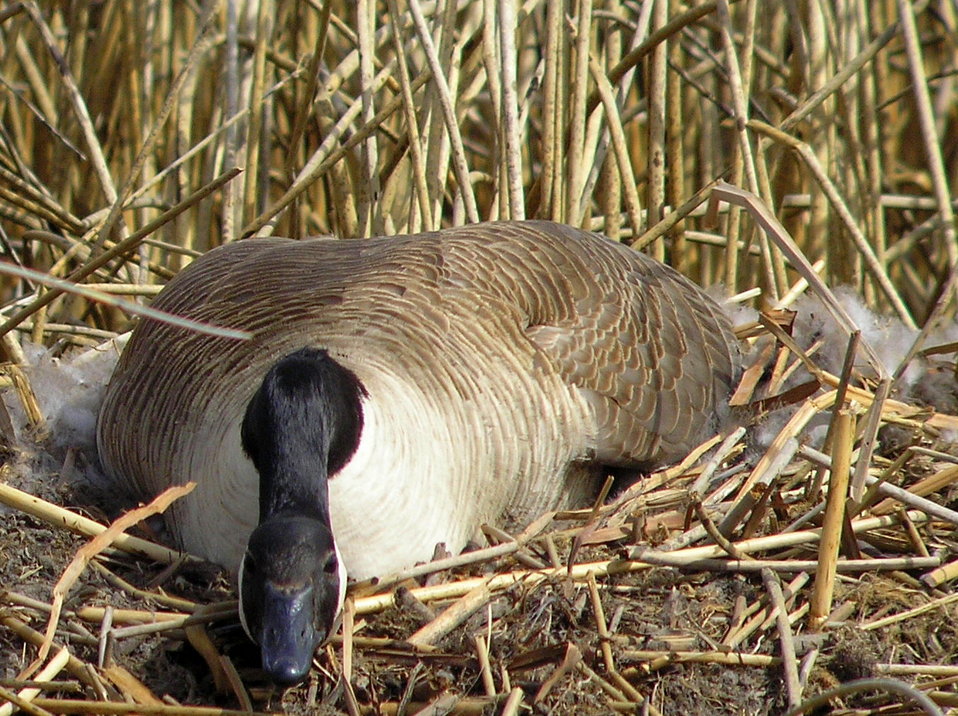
Canada goose nesting on muskrat house Lacreek NWR

Muskrat houses or lodges make a perfect nesting platform for Canada geese.